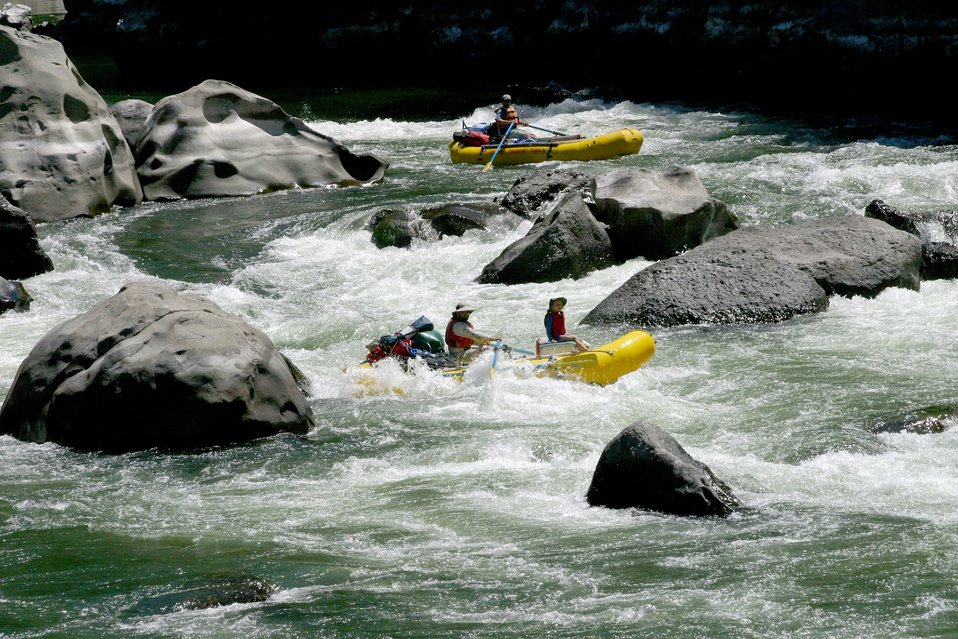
Boaters negotiate Blossom Rapids.